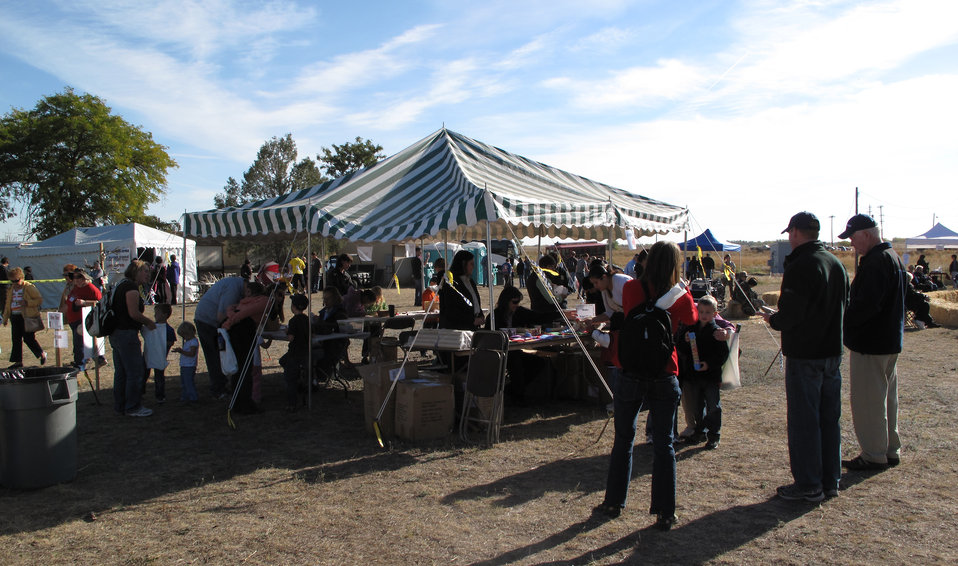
Refuge Round-up 2010

Art booth.